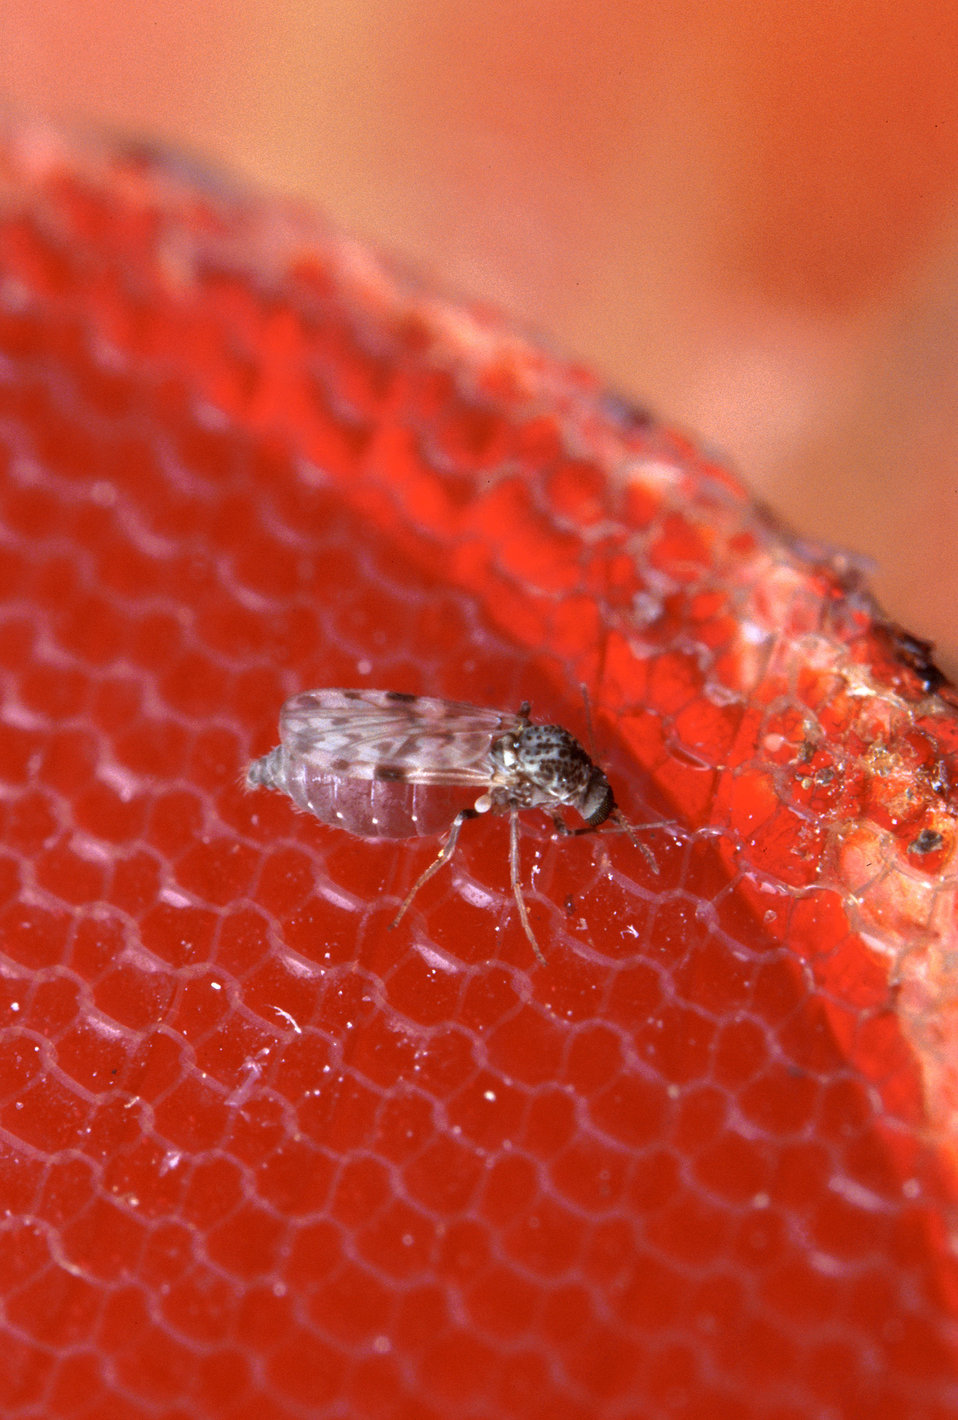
A sixteenth-inch-long female biting midge (Culicoides sonorensis) feeds on blood delivered through an artificial membrane developed for mass insect rearing.